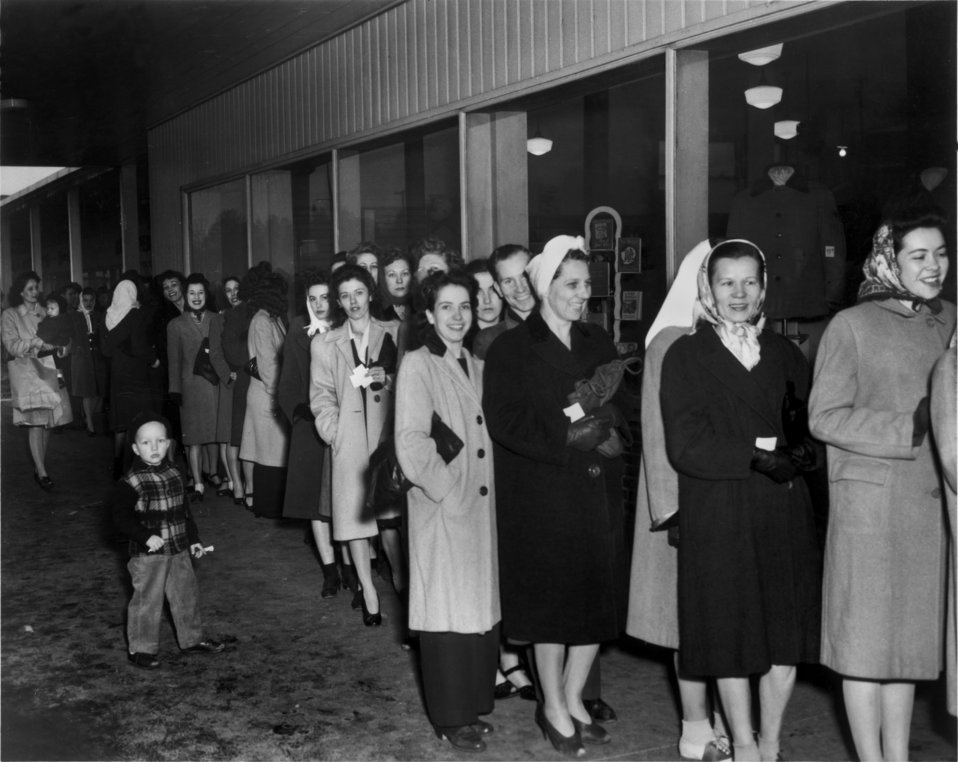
Standing in line for nylon stockings at Millers dept. store Oak Ridge

1340-1 DOE photo by Ed Westcott 1/4/46 Oak Ridge Tennessee
standing in line for nylon stockings at millers dept. store